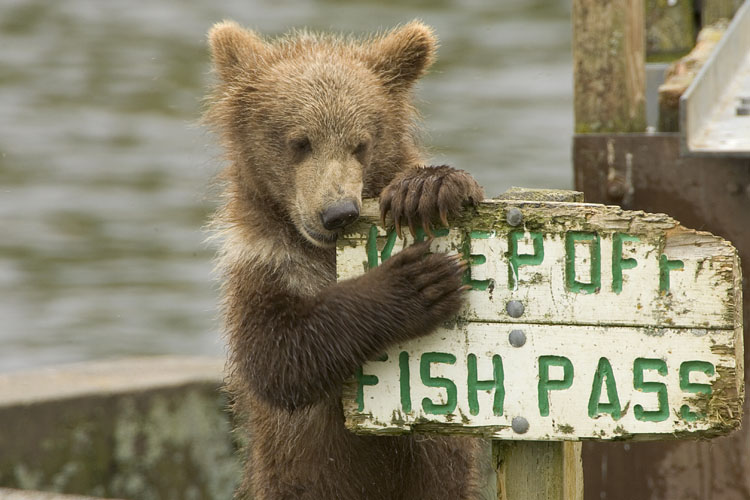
Kodiak Brown Bear

Kodiak National Wildlife Refuge- Wildlife